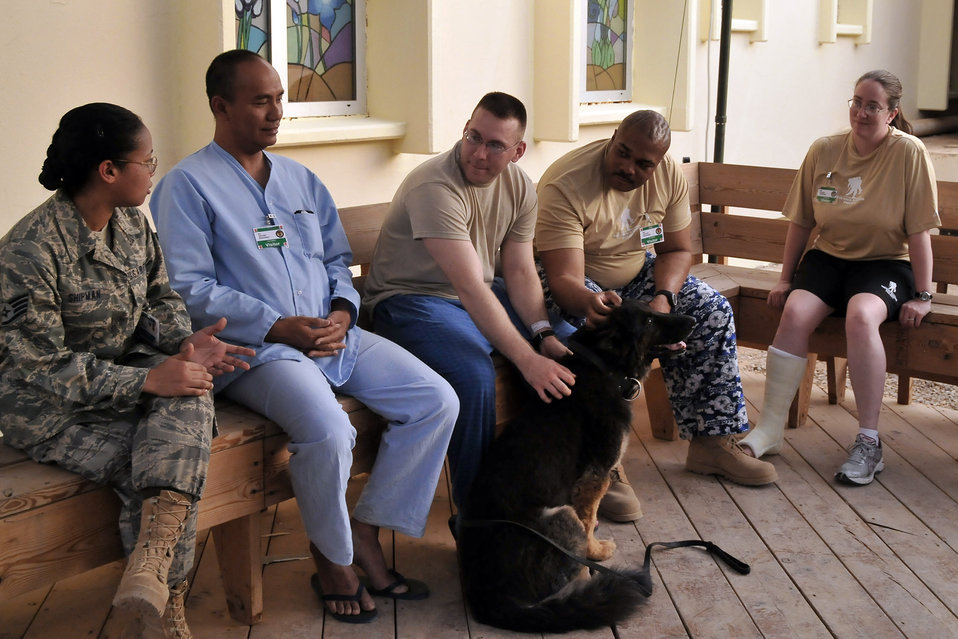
Airmen 'unleash' new recovery program for patients

Staff Sgt. Janice Shipman explains to Air Force Theater Hospital patients the purpose of the K-9 Visitation Program May 15 at Joint Base Balad, Iraq. The program works to further patient recovery after injury or illness through animal-assisted therapy. Sergeant Shipman is a 332nd Expeditionary Medical Group intensive care unit aerospace medical technician. She is deployed from Travis Air Force Base, Calif., and is a native of Phenix City, Ala.